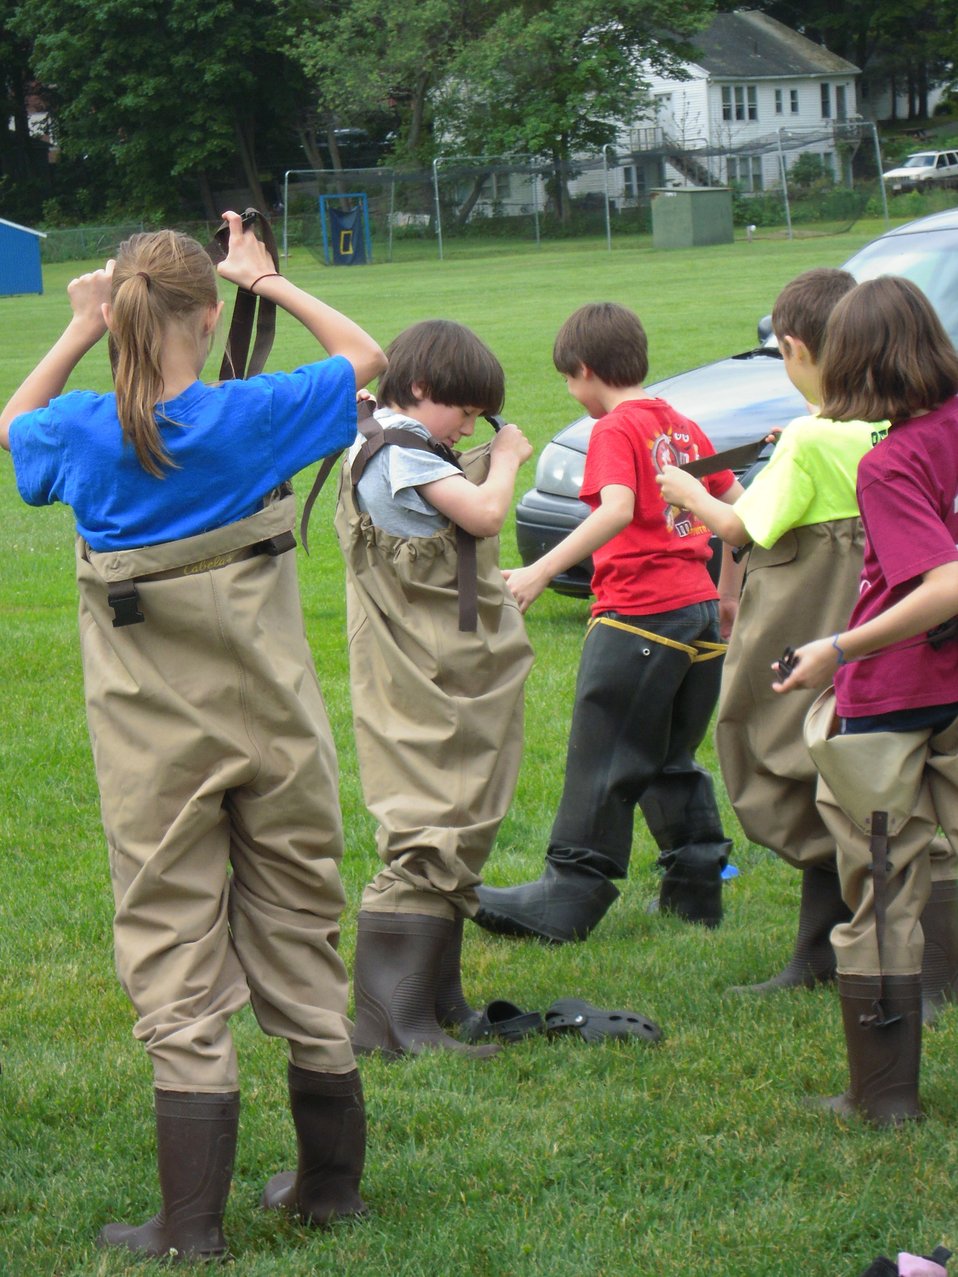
Kids in waders